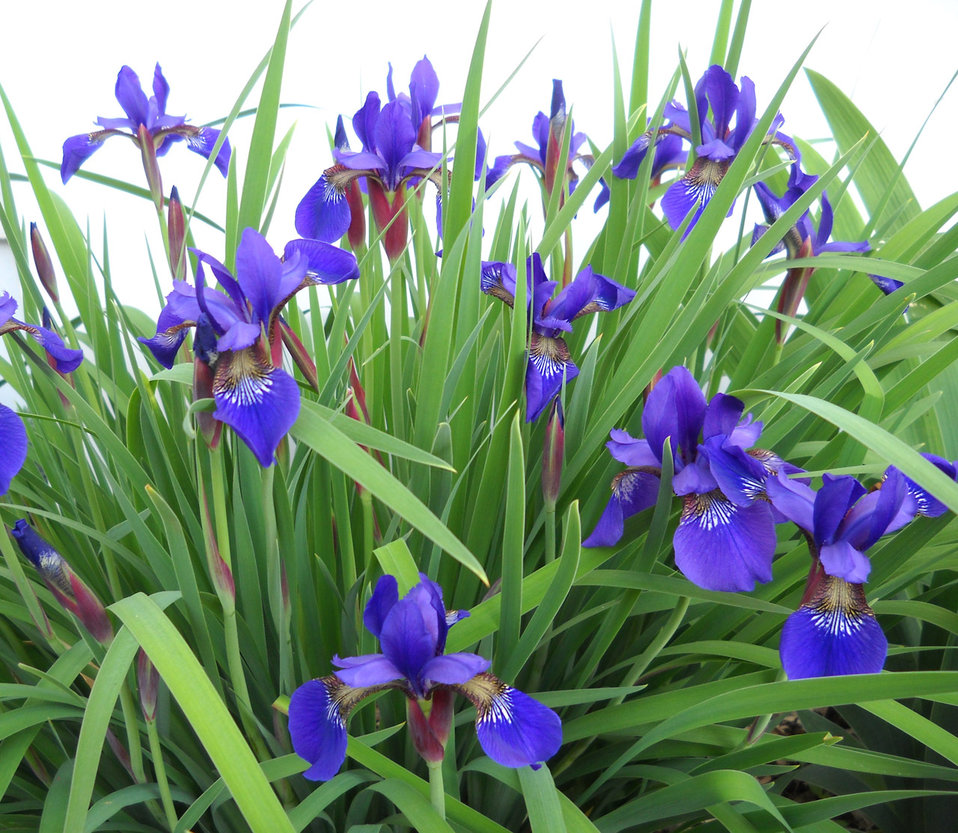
Siberian iris

Photo of a pretty blue siberian iris plant.